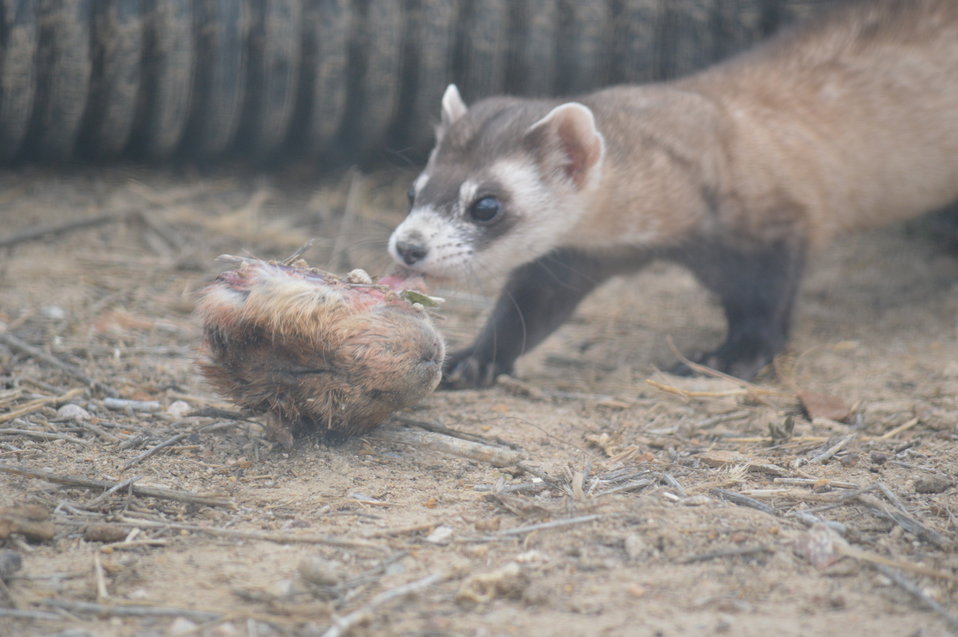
Interns visit the NBFFCC

A ferret sniffs his meal. In the summer of 2012, USFWS Region 6 interns visited the National Black-footed Ferret Conservation Center (NBFFCC) in Colorado to learn how the program reintroduces the endangered Black-footed ferret back into its native habitat.